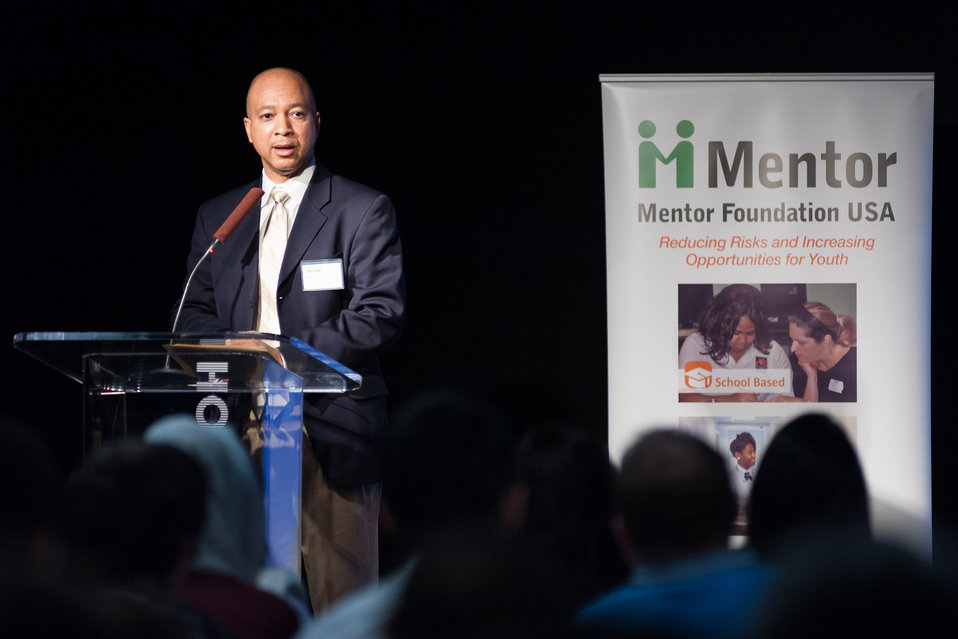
Mentor NDFW Event 2014

Mentor Foundation USA, in partnership with the National Institute on Drug Abuse (NIDA) and other key partners hosted a Youth Drug Facts Rally at the House of Sweden on Thursday, 30th January 2014. Approximately 200 students from five local high schools attended and had the opportunity to interact with top U.S. scientific experts, and inspiring guest speakers to “shatter the myths” about drugs and substance abuse, while pledging to stay drug-free.